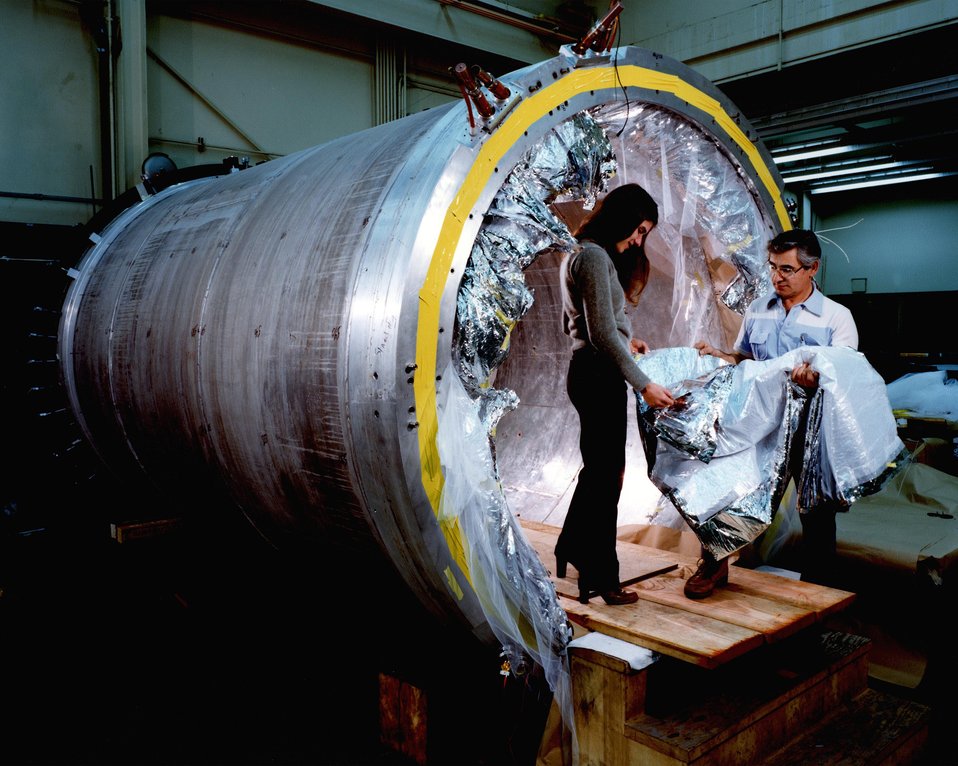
TECHNICIAN INSTALLING SUPER-INSULATION IN THE TIME PROJECTION CHAMBER (TPC) SUPERCONDUCTING MAGNET.

THE POSITRON-ELECTRON PROJECT (PEP) IS A JOINT UNDERTAKING OF STANFORD LINEAR ACCELERATOR CENTER (SLAC) AND THE LAWRENCE BERKELEY LABORATORY (LBL). THE PEP MACHINE IS DESIGNED TO STORE BEAMS OF ELECTRONS AND POSITRONS CIRCULATING IN OPPOSITE DIRECTIONS AT SINGLE-BEAM ENERGIES BETWEEN 4 GEV AND 18 GEV. THE SOURCE OF THE BEAMS WILL BE THE PRESENT SLAC ACCELERATOR. THE COUNTER-ROTATING BEAMS OF ELECTRONS AND POSITRONS WILL COLLIDE WITH EACH OTHER AT SIX POINTS IN THE MACHINE. THESE COLLISION OR BEAM-INTERACTION POINTS WILL BE USED FOR HIGH-ENERGY PHYSICS EXPERIMENTS.